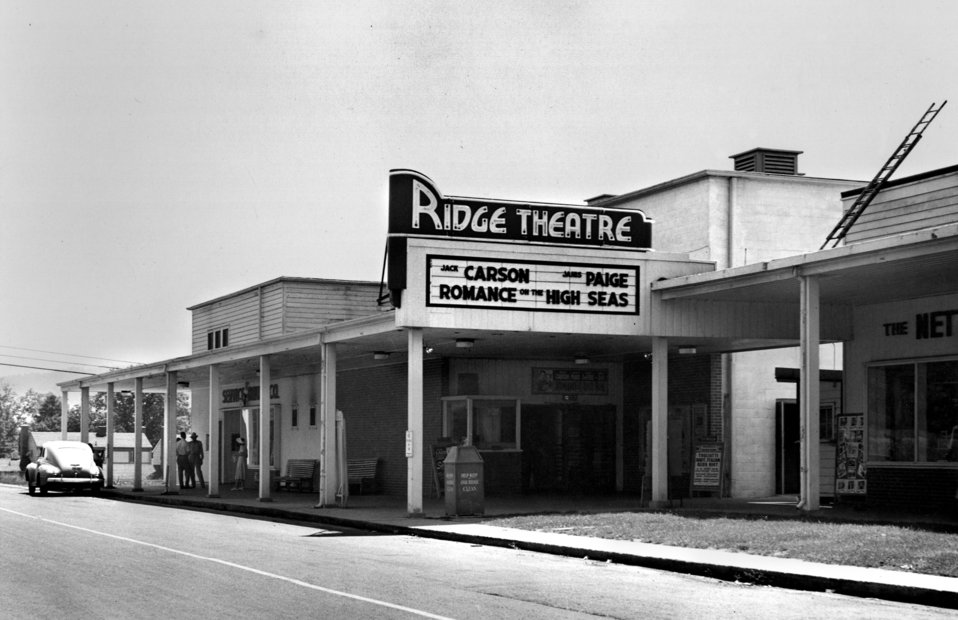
Ridge Theatre, Exterior Oak Ridge

5121-1- DOE photo by Ed Westcott Oak Ridge Tennessee 1948